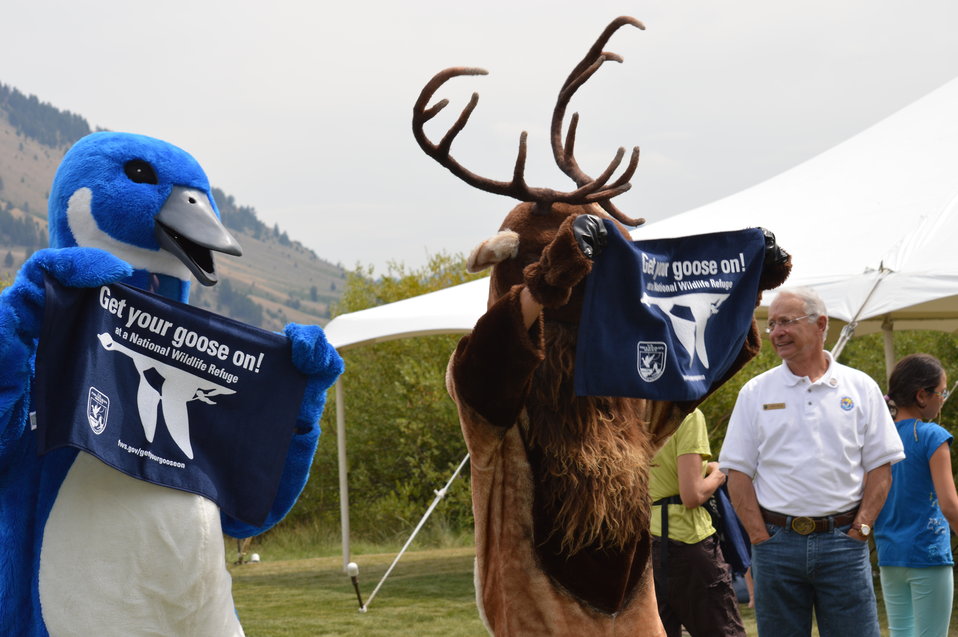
Get Your Goose On! - National Elk Refuge Style

On August 10, 2012 the U.S. Fish and Wildlife Service and Partners celebrated the 100 year anniversary of the establishment of the National Elk Refuge. In these photos, young attendees, along with Puddles the Blue Goose and the National Elk Refuge's mascot, showed us how to Get Your Goose On! with style.